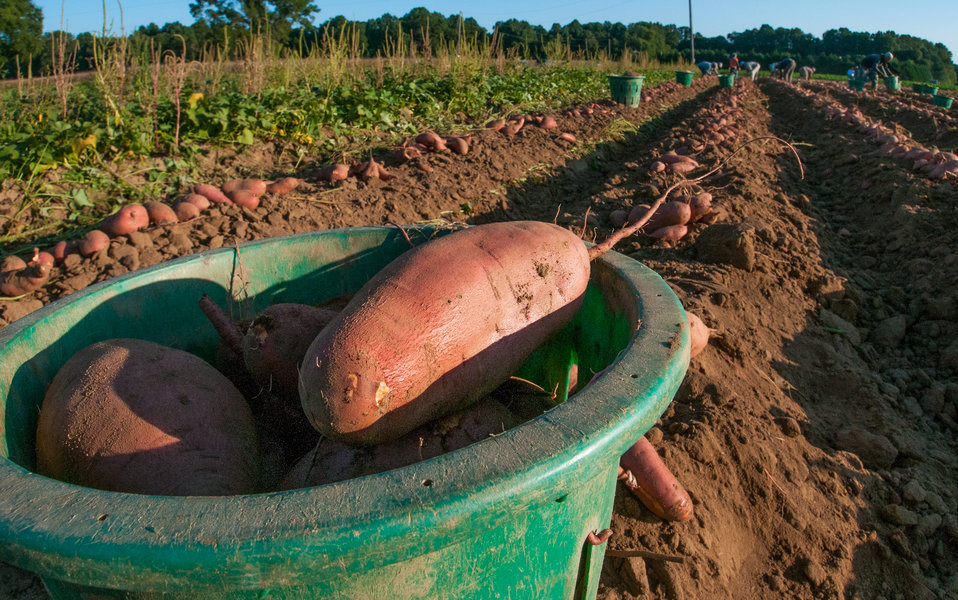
Large sweet potatoes grown underground, are first plowed up, then migrant workers delicately lift them to the top of the soil mound, and sort the potatoes according to size at Kirby Farms in Mechanicsville, VA on Sep. 20, 2013. Kirby Farms is a third-generation family farm that covers 500 acres, and generates produce and grains on a year-around operation. Please see the photoset description for more information about this farm operation.